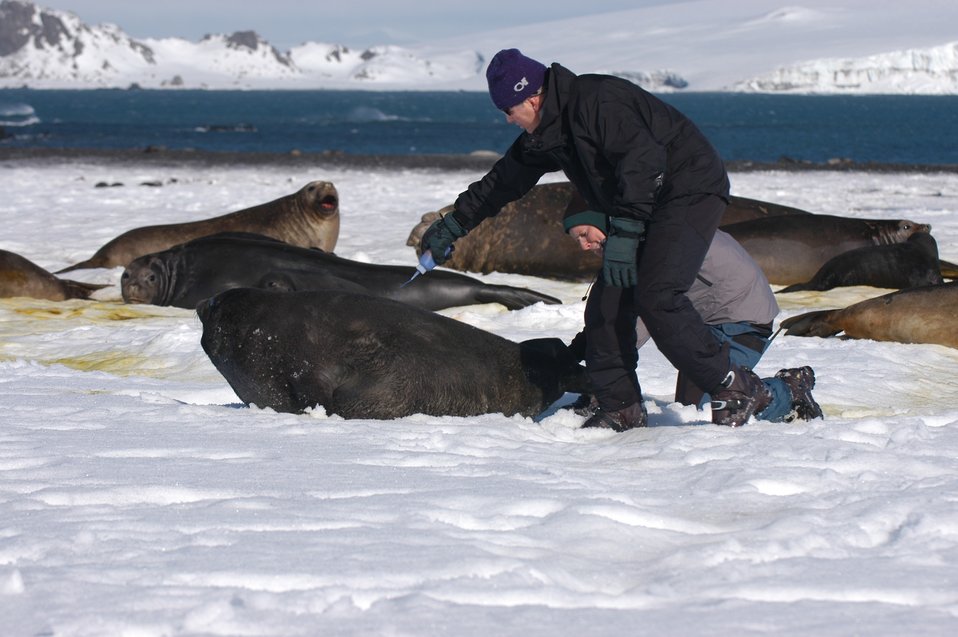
Preparing elephant seal cow for placement of satellite transmitter